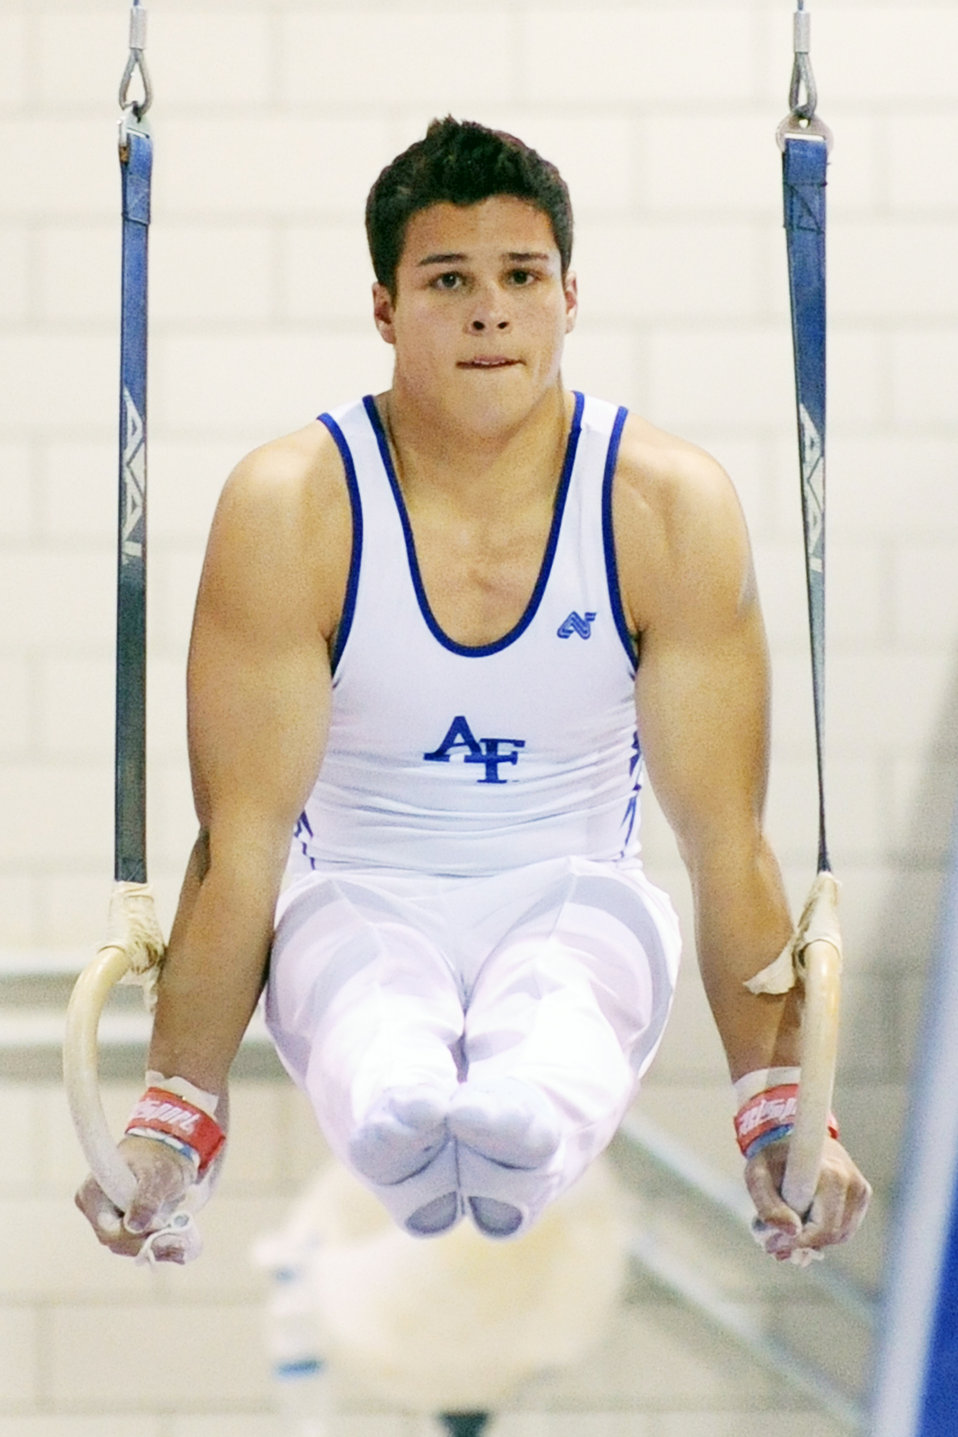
Academy gymnasts compete in Blue-Silver invitational

Falcon Freshman Thom Wilkinson competes on the still rings during the second annual Blue-Silver Invitational at the U.S. Air Force Academy's Cadet West Gym Dec. 5, 2009. The Air Force gymnastics